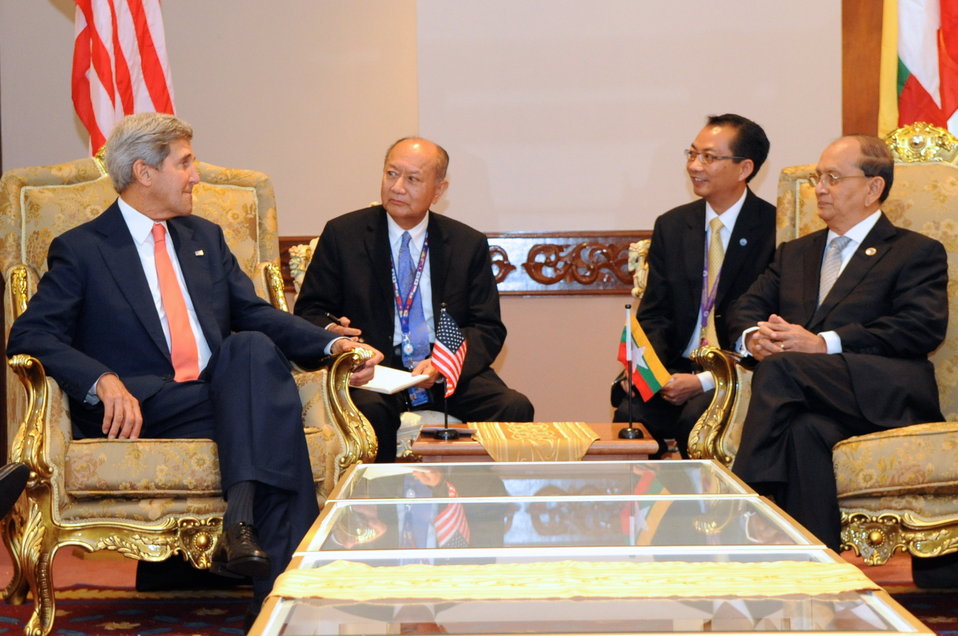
Secretary Kerry Meets With Burmese President Thein Sein

U.S. Secretary of State John Kerry meets with Burmese President U Thein Sein before the East Asia Summit in Bandar Seri Begawan, Brunei, on October 10, 2013.